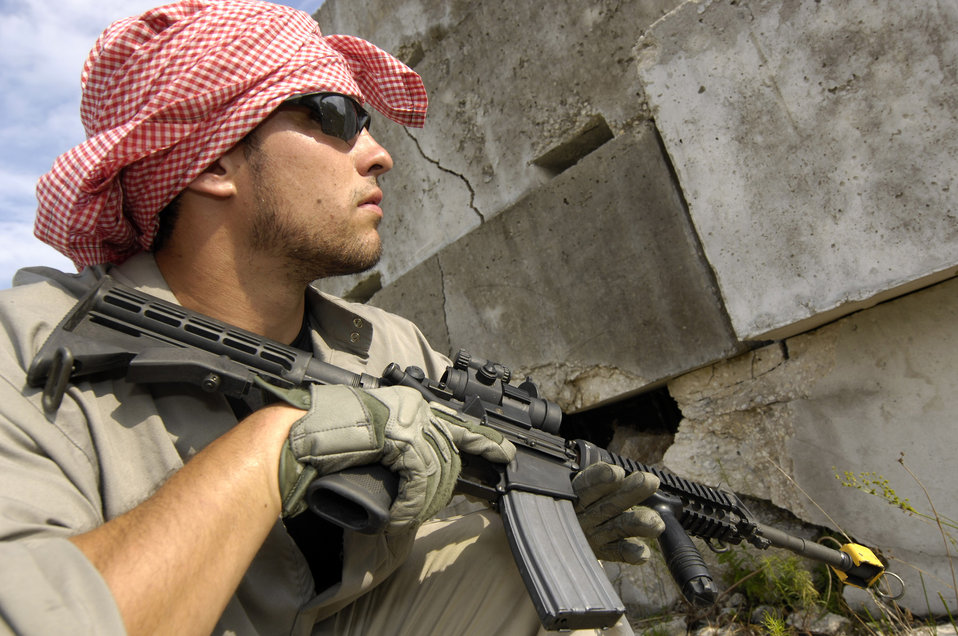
Atlantic Strike VII

A member of the opposing forces prepares to simulate an attack June 16 during Atlantic Strike VII at the Avon Park Air Ground Training Complex, Avon Park, Fla. Atlantic Strike is a joint-forces training event involving joint terminal attack controllers from the Army, Air Force and Marines held semi-annually.